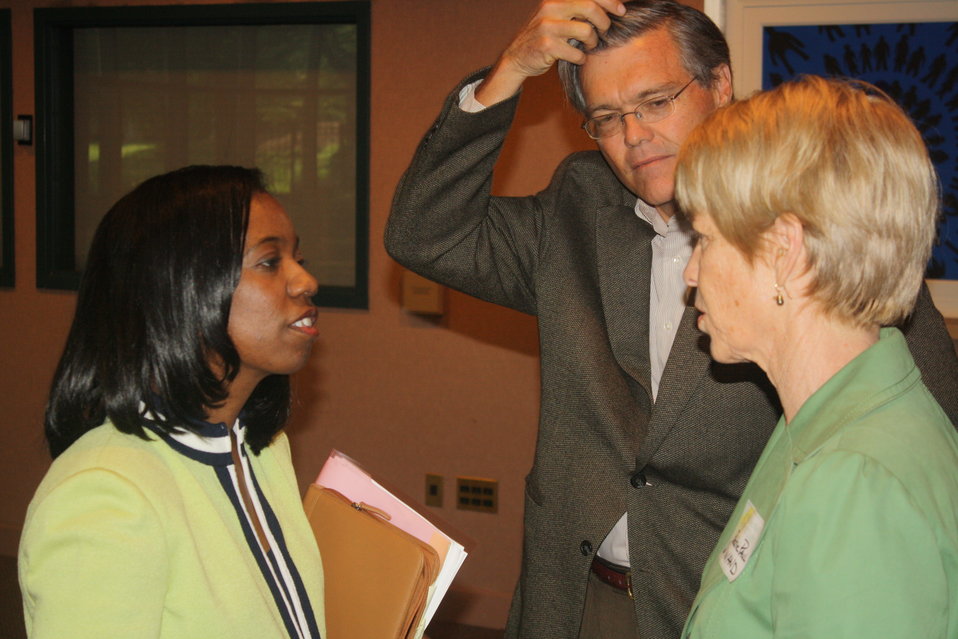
Faith-Based and Neighborhood Partnership launch at Atlanta's Carter Center